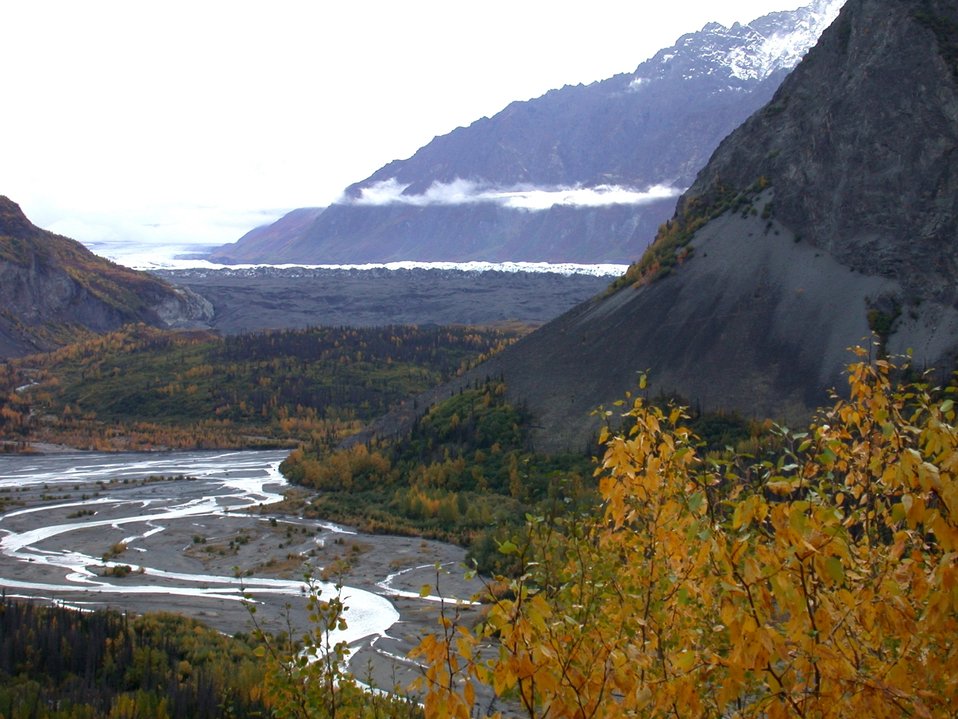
Looking up a glacial valley. The dark area with white on top is the glacial front. The melting glacier is the source of the braided stream in the foreground.